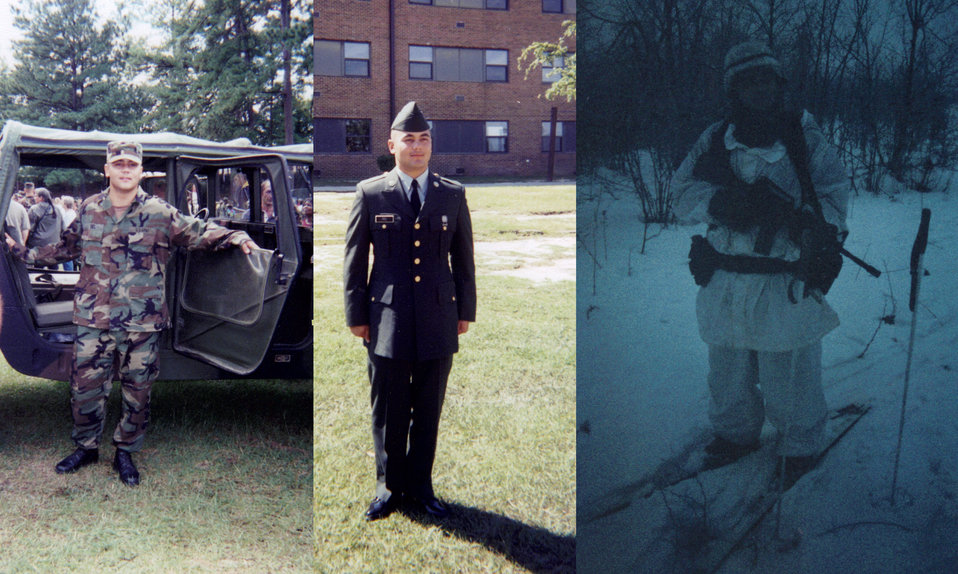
Jason Riel, a Budget Technician in Region 1, served in the Army in 2000-2003. He also served in the Army National Guard.